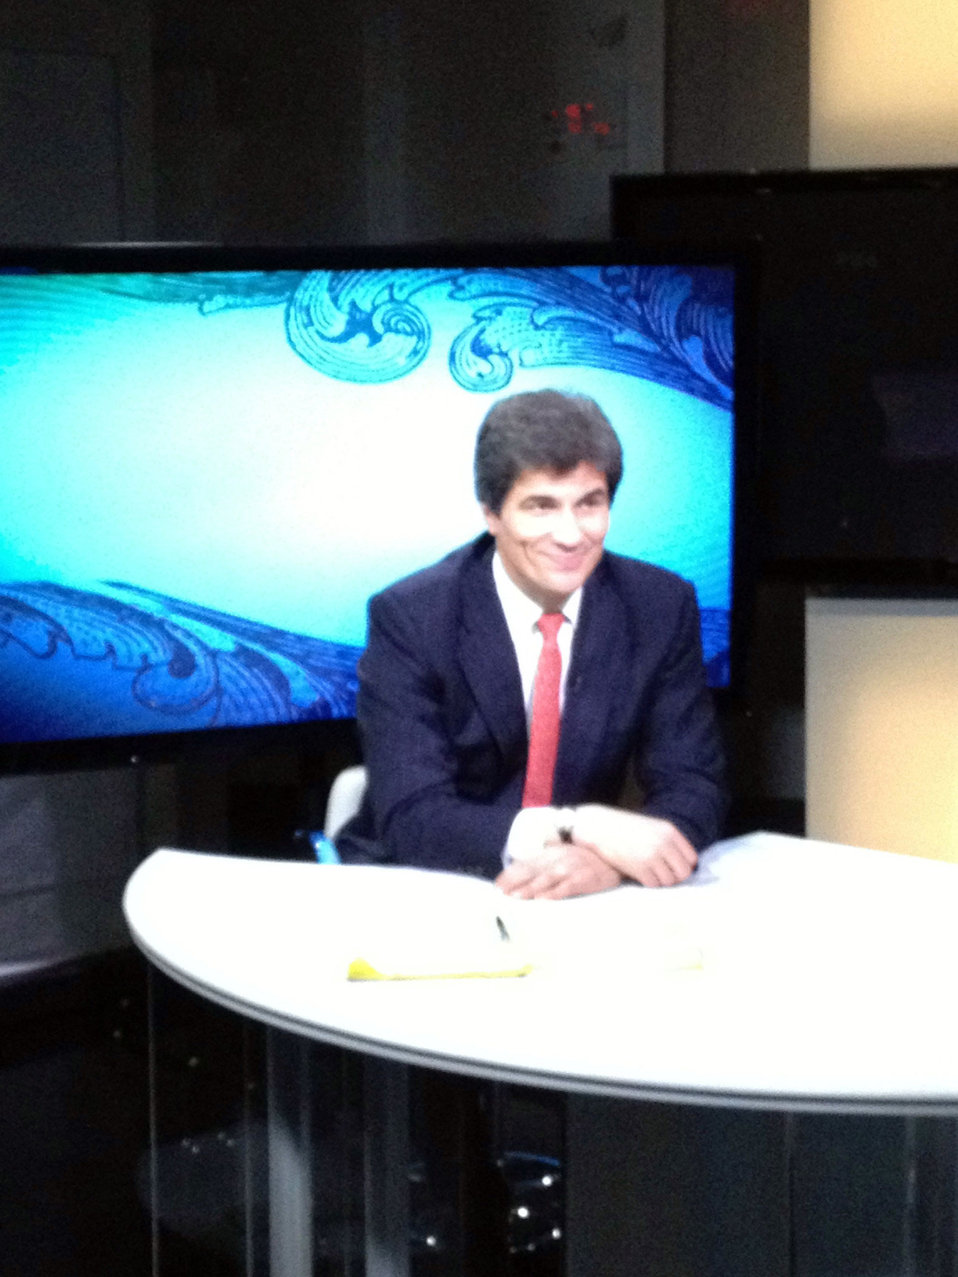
Assistant Secretary Fernandez Prepares for his CNN en Español Interview

Assistant Secretary of State for Economic and Business Affairs Jose W. Fernandez prepares for his interview with CNN en Español out of the CNN studio in Miami, Florida, February 6, 2013.